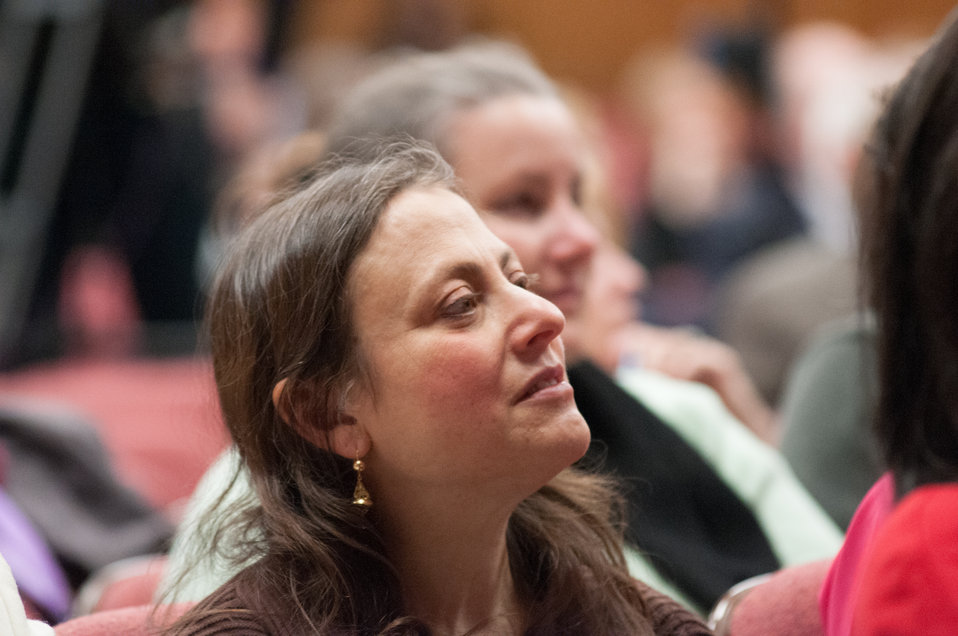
An U.S. Department of Agriculture (USDA) audience listen to the speakers, during the 2013 Women’s History Month Observance event, “Women Inspiring Innovation Through Imagination: Celebrating Women in Science, Technology, Engineering, and Mathematics, on Thursday, March 21, 2013, in Washington, D.C. The keynote speaker is American Association of University Women Executive Director and CEO Linda Hallman. Additional remarks were made by Agriculture Deputy Secretary Dr. Kathleen Merrigan; Rural Development Acting Deputy Under Secretary Judith Canales; Administration Deputy Assistant Secretary Deputy Assistant Secretary Robin Heard; and Agriculture Research Service National Programs Associate Administrator Dr. Chavonda Jacobs-Young.